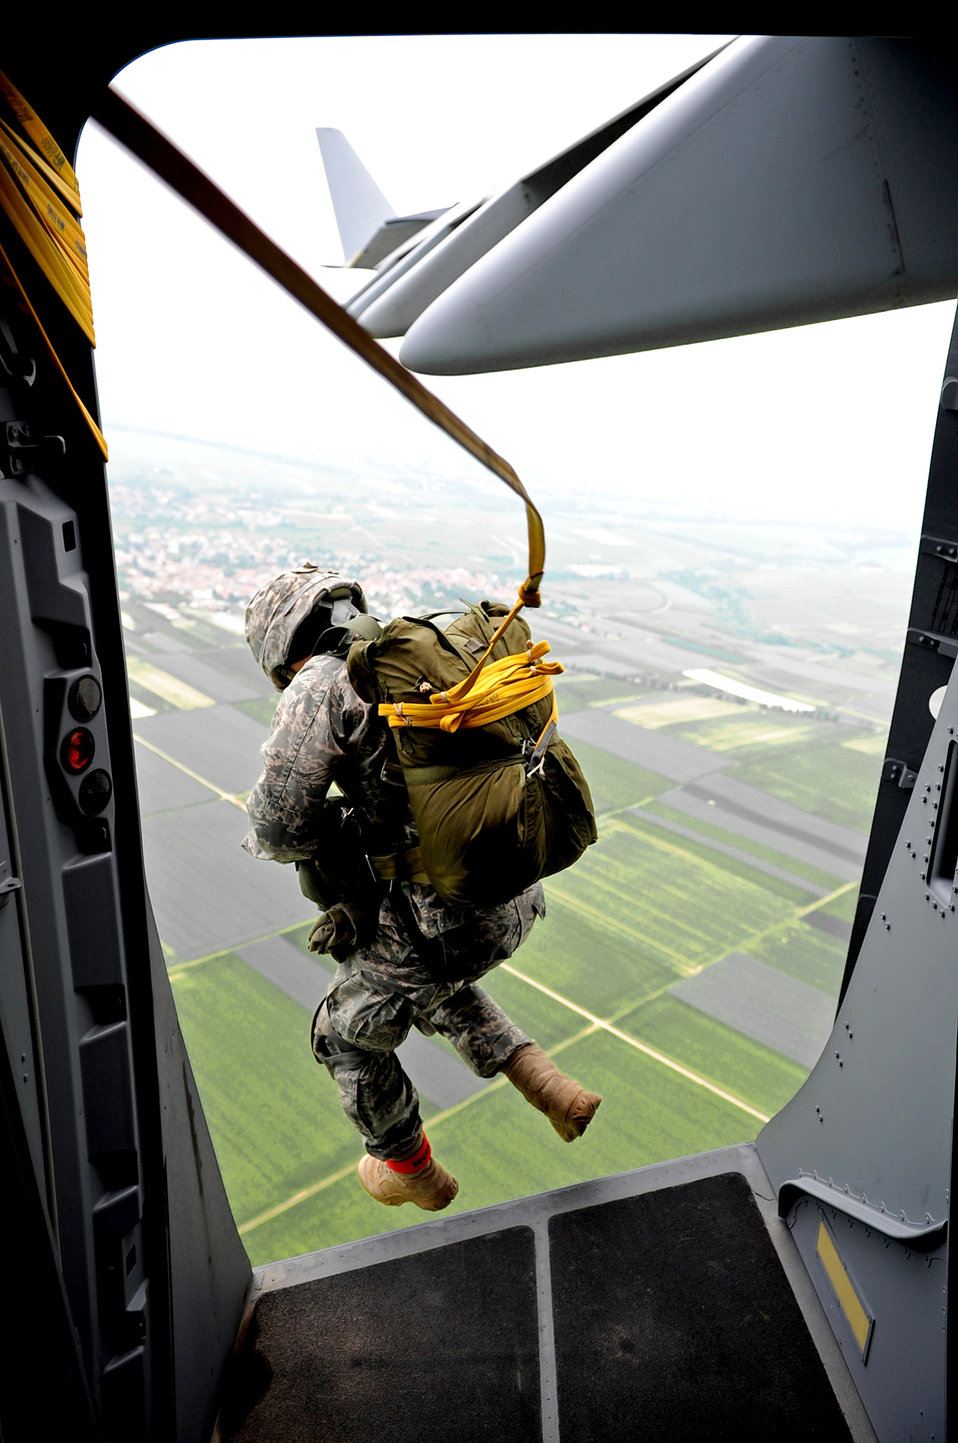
Ramstein Airmen participate in NATO jump

Col. Timothy Brown, 435th Contingency Response Group commander, executes an airborne jump out of a C-17 Globemaster III over the drop zone in Alzey, Germany, June 14, 2010. Colonel Brown is the 435th Contingency Response Group commander.